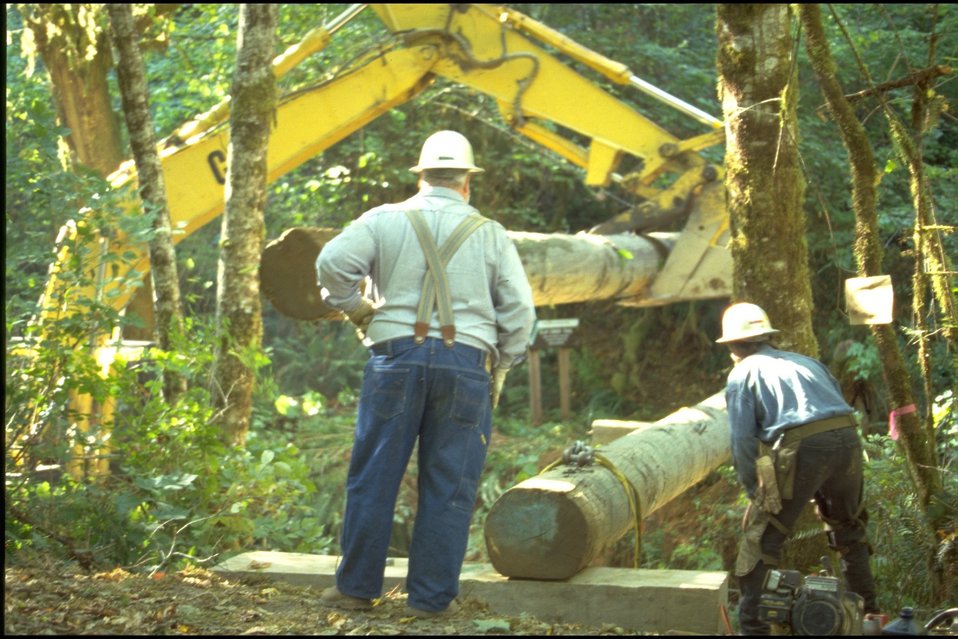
Clay Creek Foot Bridge.